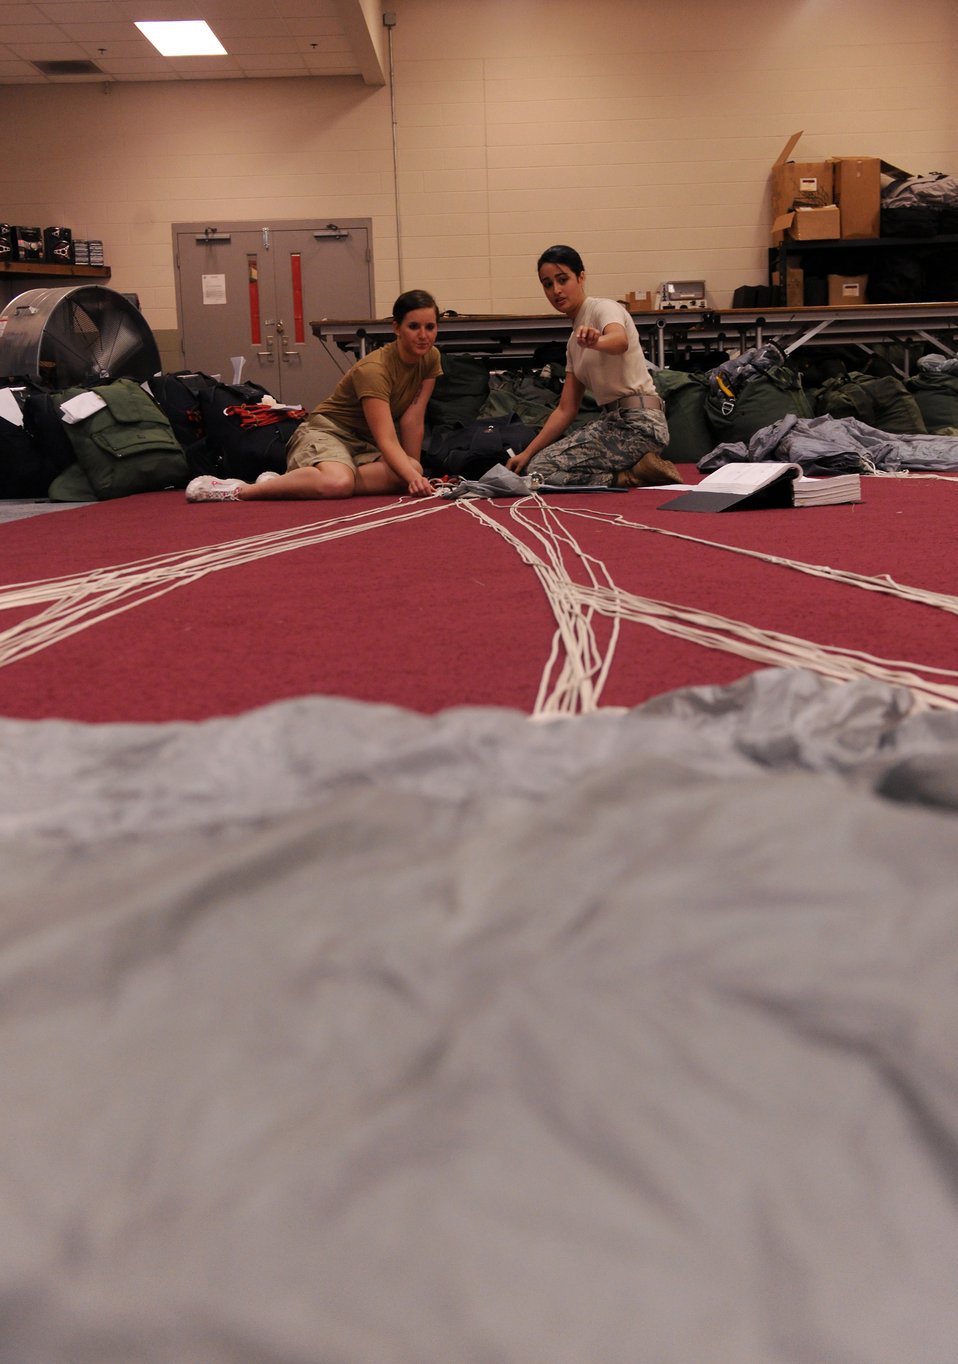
Logistic support

Senior Airman Andrea Brandenberg trains Airman 1st Class Caitlan Bunn on how to properly pack a free-fall parachute May 10, 2010, at Moody Air Force Base, Ga. Airman Brandenberg is a 38th Rescue Squadron logistics flight aircrew flight equipment journeyman. Airman Bunn is a 38th RQS AFE apprentice. Airmen Brandenberg and Bunn are just two of the more than 10 Airmen who pack parachutes for the 38th RQS.